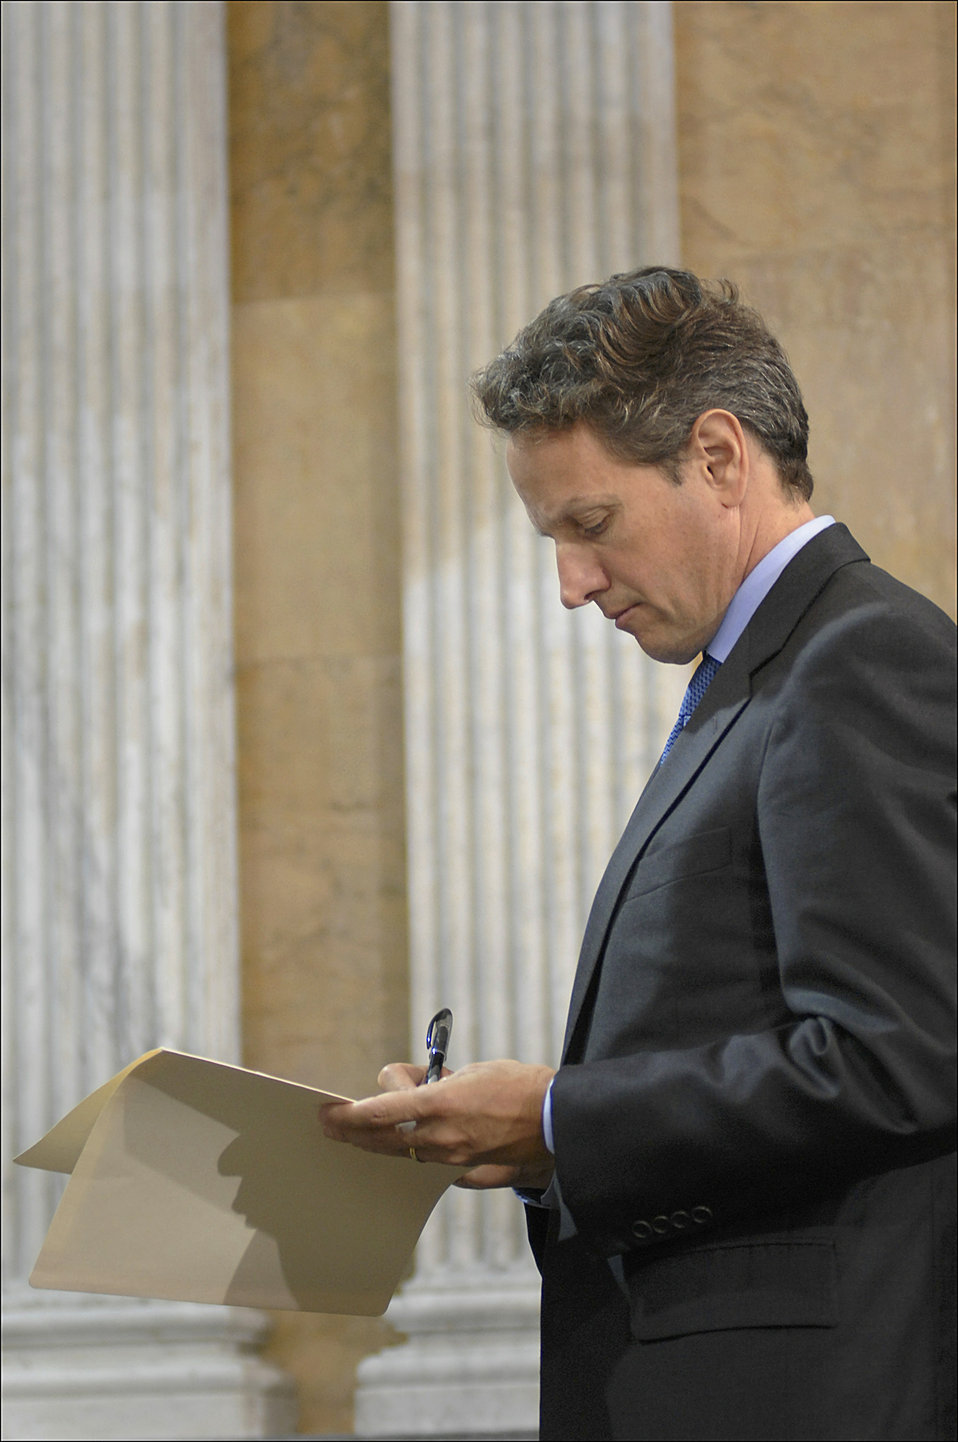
Conference on the Future of Housing Finance, 08/17/2010

Treasury Secretary Tim Geithner taking notes before hosting a panel at the Conference on the Future of Housing Finance hosted by the Treasury Department and HUD.